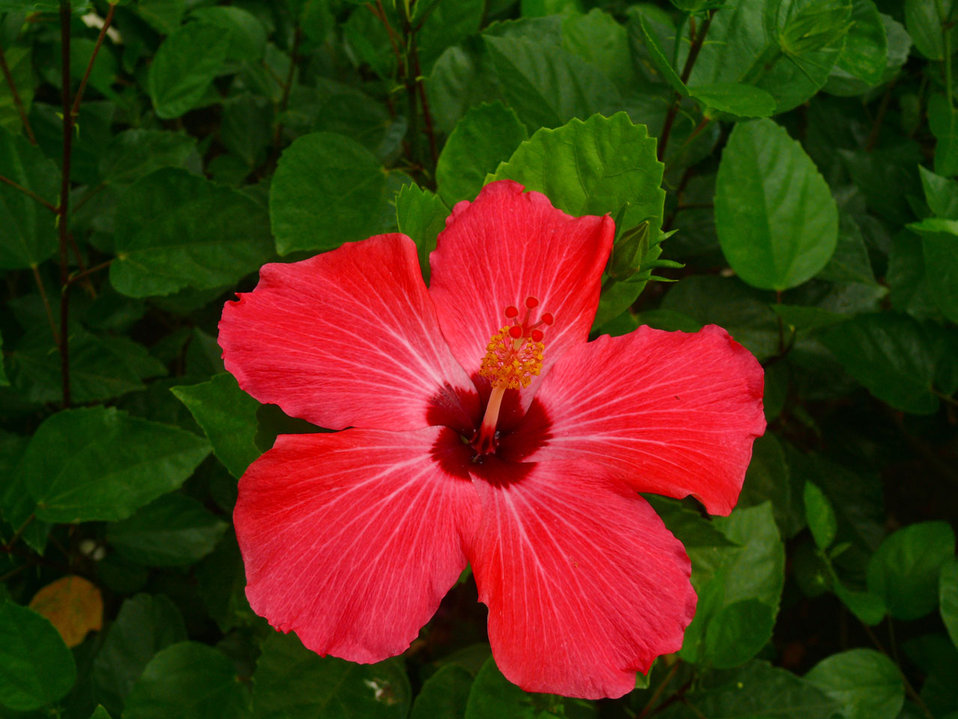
Flower

Red flower.